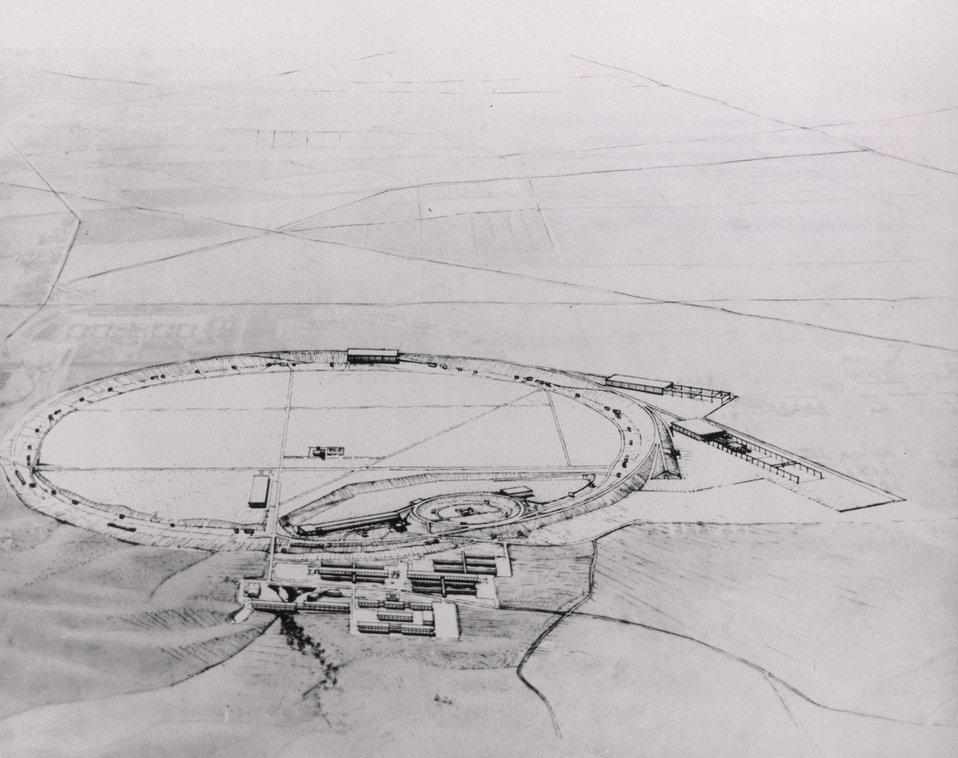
Artist's concept of proposed 200 billion electron volt (BeV) National Accelerator Facility. Circa 1966.